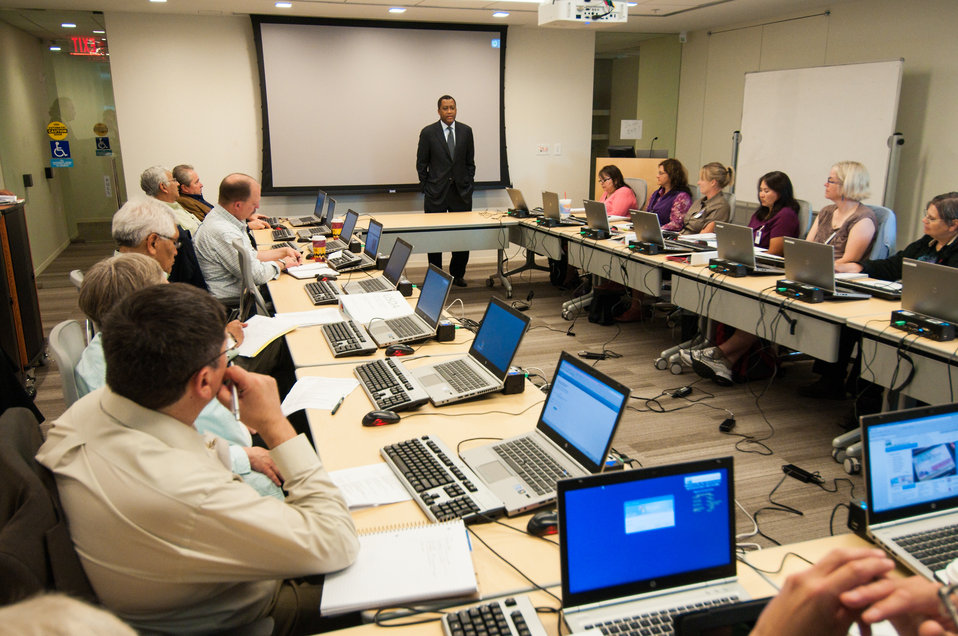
U.S. Department of Agriculture (USDA) Assistant Secretary for Civil Rights Dr. Joe Leonard, Jr. discusses USDA’s Civil Rights efforts to level the playing field to ensure that all groups have equal access to federal resources at the USDA 2013 Land-Grant Development Tribal Fellows Program held in Washington, D.C. on Monday, Jun. 03, 2013.